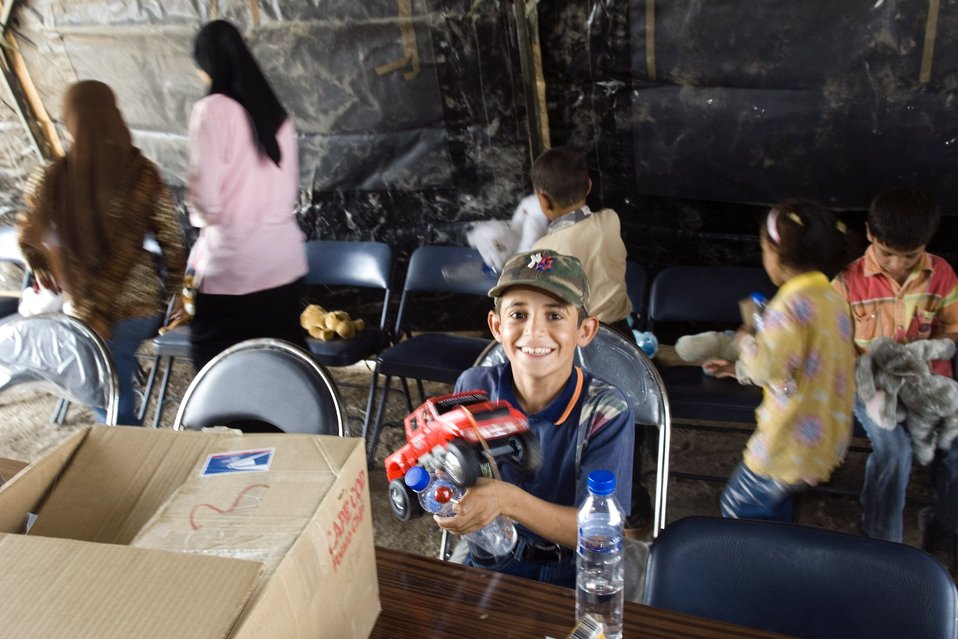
Americans, Iraqis interact at historical monument

A young Iraqi boy shows off his new truck during an Aug. 21 visit by 80 Iraqi citizens to the historical Ziggurat located on Ali Air Base, Iraq. The Ali AB First Four Council sponsored the visit. This is the first time in more than 10 years that Iraqi civilians have been allowed to step on the grounds of the historical site, which was built in the ancient city of Ur and includes the house of the biblical prophet Abraham.